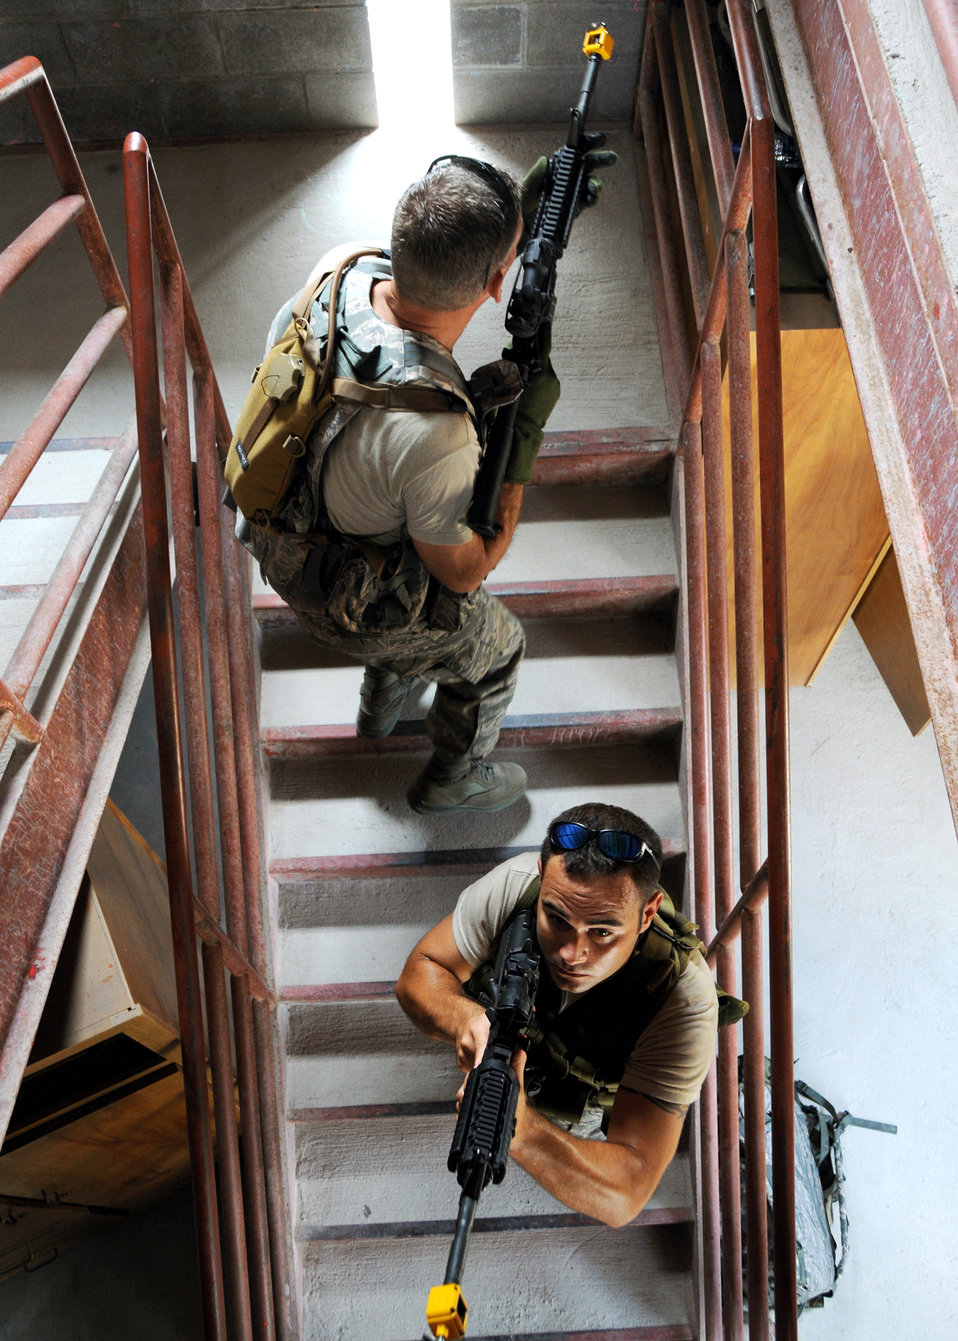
Clear!

Staff Sgt. William Messer (top) and Tech. Sgt. John Glenister, security forces Airmen, advance up a staircase during a room-clearing training exercise Aug. 7, 2010, at Eglin Air Force Base, Fla. Air Force Reserve Command's 919th Security Forces Squadron teams practiced entry and clearing tactics with varying targets and objectives.